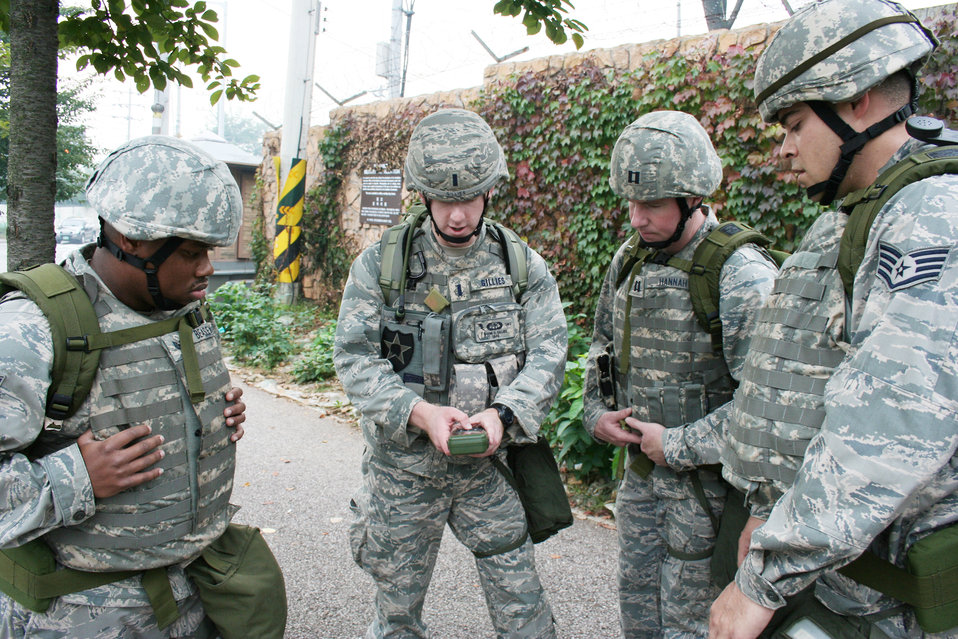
Weather warriors endure 'turbulent climb'

1st Lt. Shane Gillies shows Tech. Sgt. Jameel Beasley (left to right), Capt. Shawn Hannah and Staff Sgt. Judd Porter how to use the defense advanced GPS receiver before the team ascends the hill during Operation Turbulent Climb Dec. 5 at Camp Red Cloud, Republic of Korea. Lieutenant Gillies is the chief of tactical operations at the Det. 1, 607th Weather Squadron.